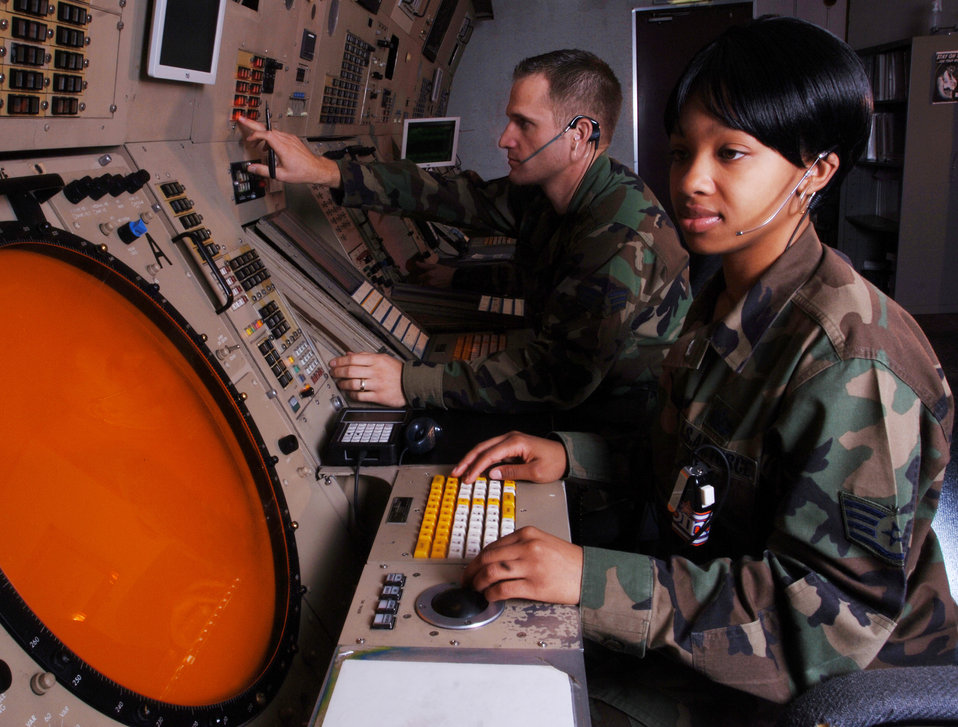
Controlling the sky

YOKOTA AIR BASE, Japan -- Staff Sgt. Carmen Jones (left) and Senior Airman David Winkfield use radarscopes to coordinate aircraft movement here. The 374th Operations Support Squadron radar approach control technicians are responsible for military, general and commercial aviation aircraft that use eight separate airports which encompass 8,575 miles of airspace in the Tokyo area. The Airmen keep planes at safe distances from each other, direct them during takeoff and landing from airports, direct them around bad weather and ensure that traffic flows smoothly with minimal delays.